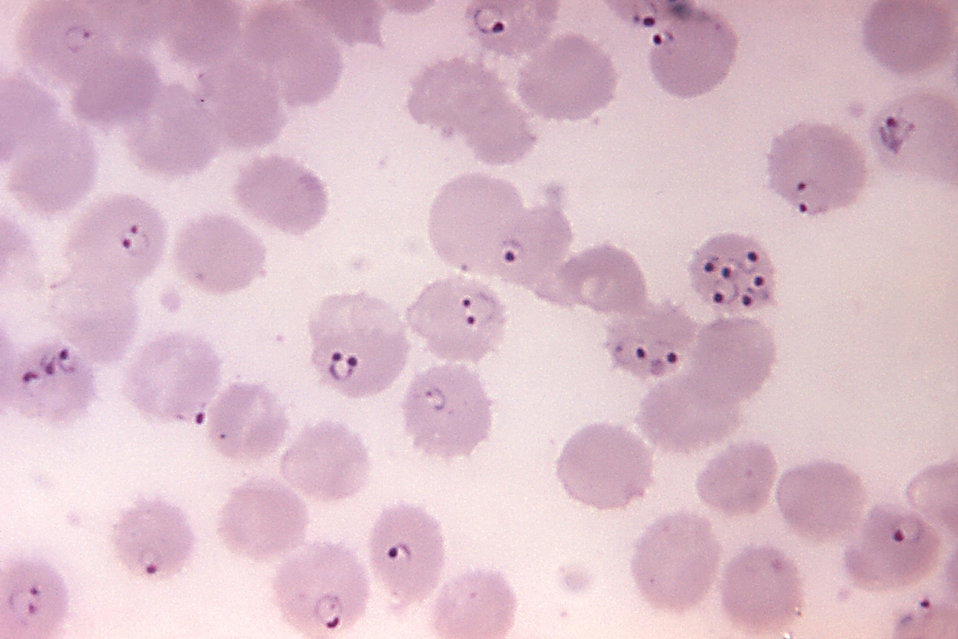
This blood smear micrograph revealed the presence of P. falciparum rings form parasites; Mag. 1125X.